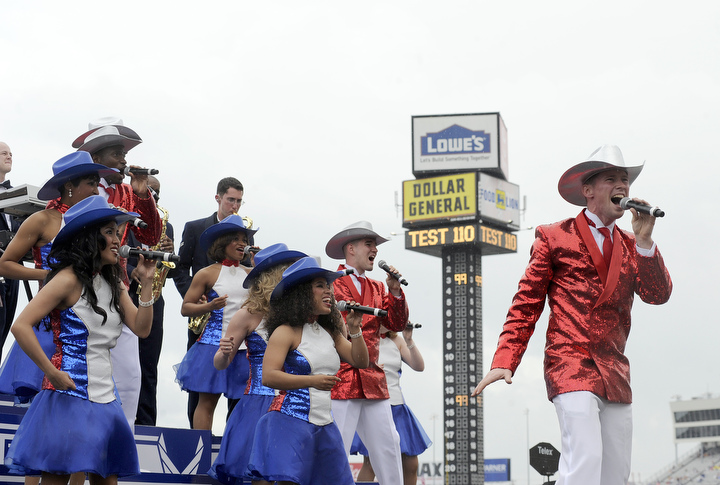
Coca-Cola 600

Tops in Blue the Air Force's premiere entertainment showcase preform before more than 100,00 NASCAR fans May 24 during a Salute to the Military during Memorial Day festivities at the Lowe's Motor Speedway Coca-Cola 600 Sprint Cup race, Charlotte, N.C.